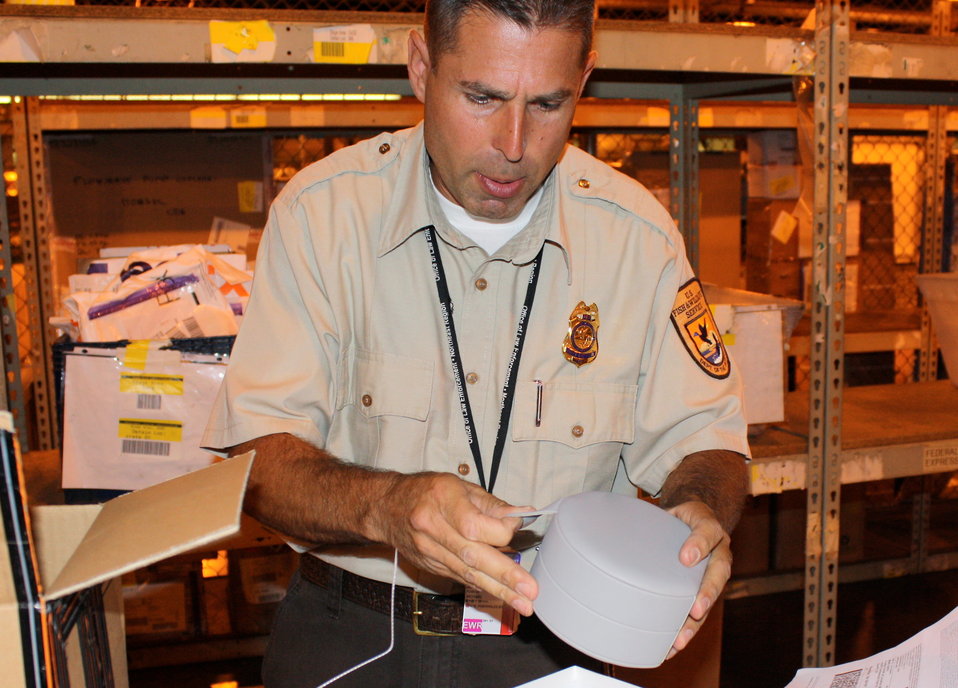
Inspector examines shipment at Newark International Airport

Inspector from the Elizabeth, N.J. Office of Law Enforcement examines shipment at Newark International Airport.